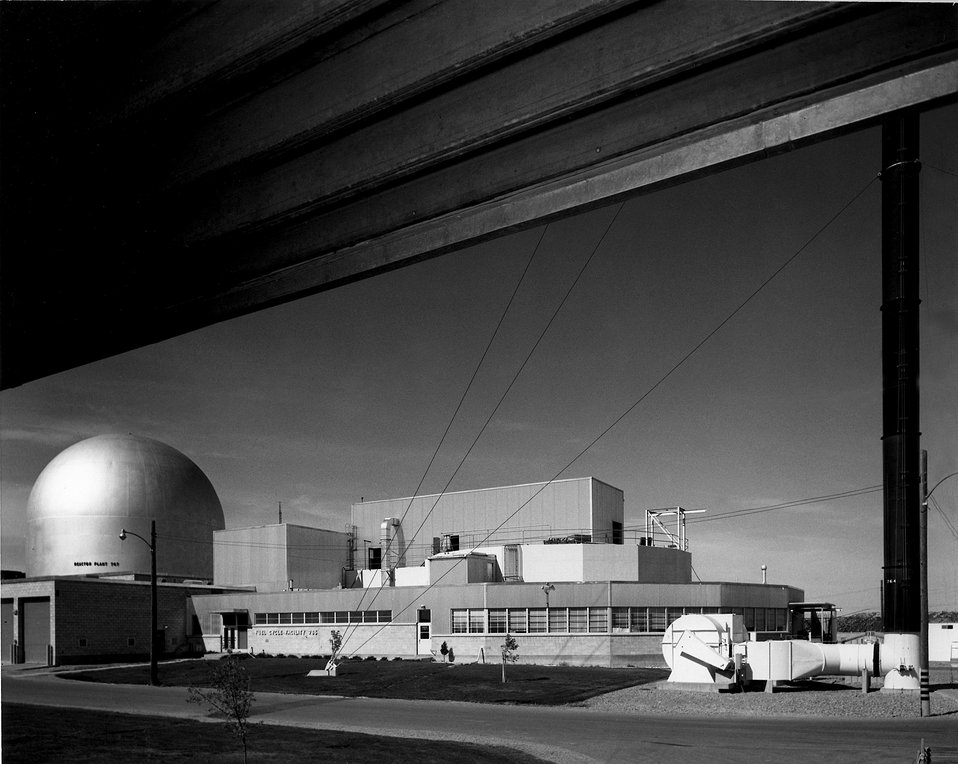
Containment shell for experimental breeder reactor no 2 with fuel cycle facility in foreground at the National Reactor Testing Station.
c.1970